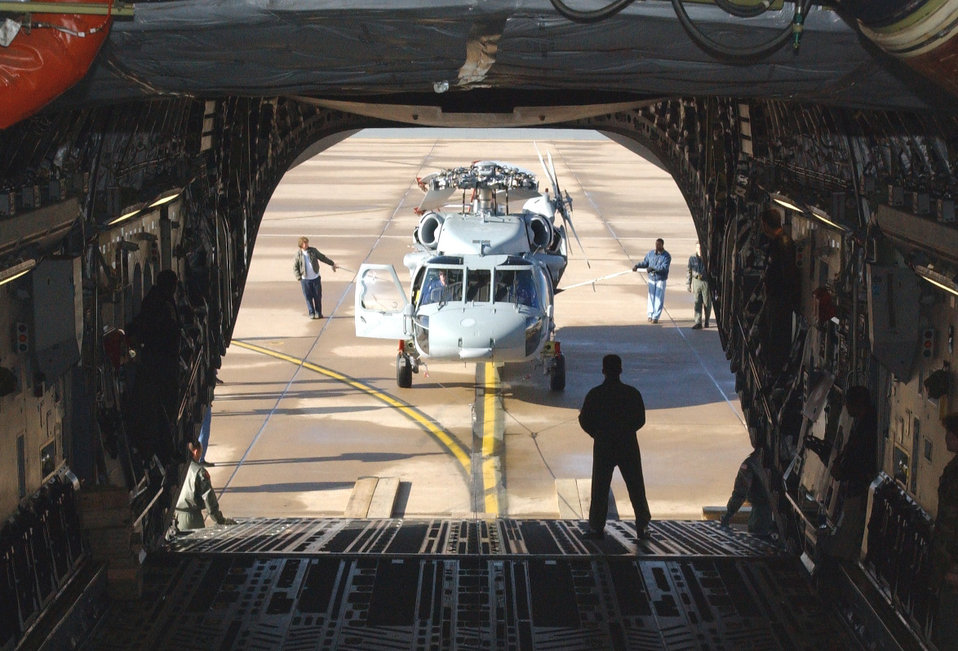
MH-60S helicopter load validated on C-17

ALTUS AIR FORCE BASE, Okla. -- Navy and Air Force specialists prepare to load an MH-60S Knight Hawk helicopter into a C-17 Globemaster III during a load validation here. It was the first time a Knight Hawk had been loaded into a C-17. The test was successful.